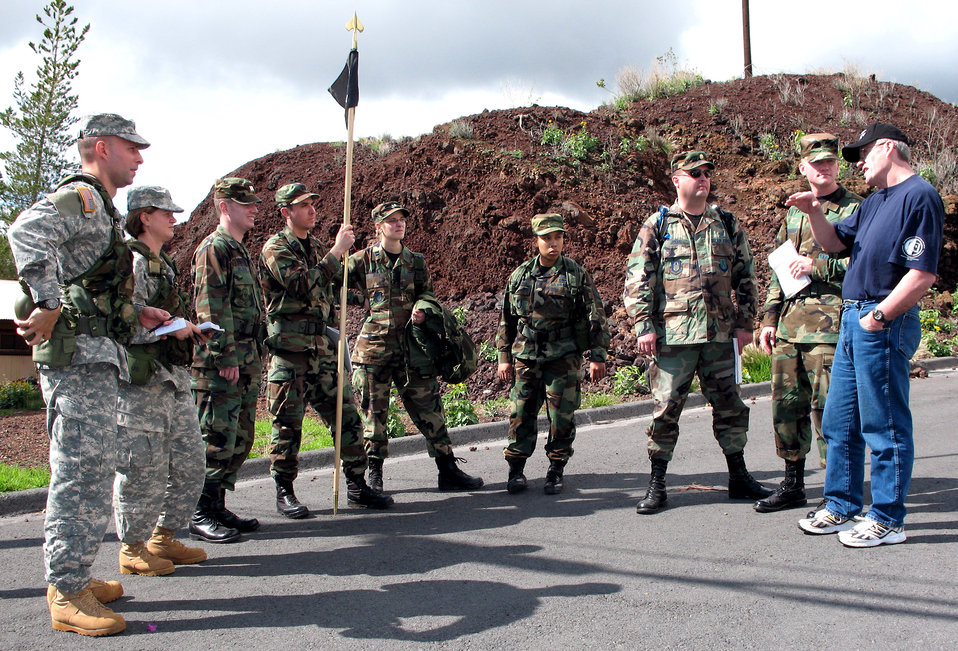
PACAF legal teams train to deploy

After posing as a non-governmental official in a legal scenario, Canadian Army Maj. Warren Fenser provides feedback Dec. 10 to students of the Pacific Joint Operations Legal Exercise, or PACJOLE, at the Pohakuloa Training Area on the island of Hawaii. PACJOLE is a Pacific Air Forces exercise involving legal Soldiers, Marines and Airmen from all over the Pacific theater.